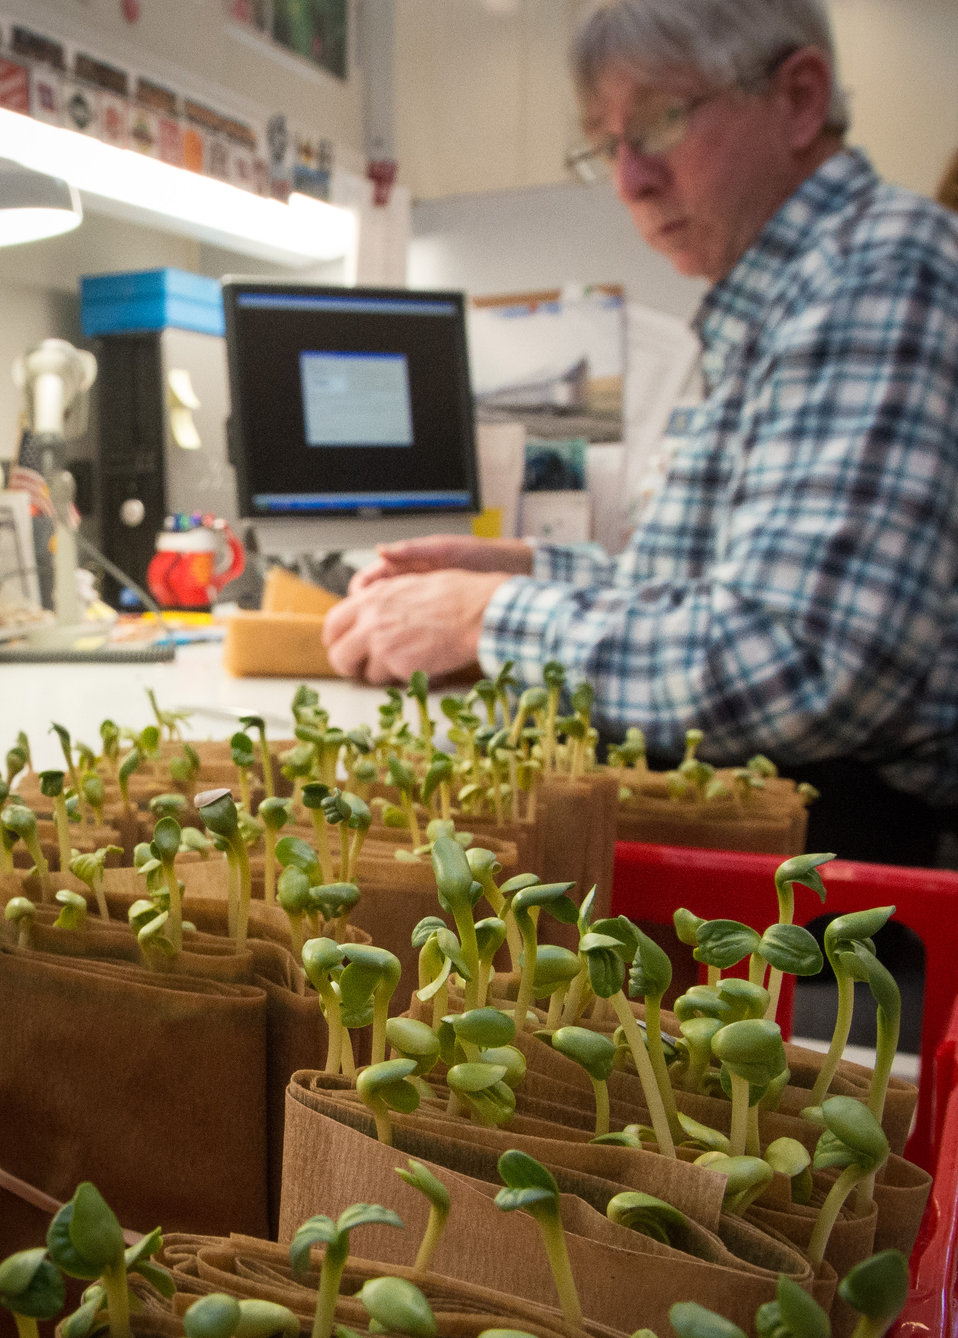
U.S. Department of Agriculture (USDA), Agriculture Research Service (ARS), National Center for Genetic Resources Preservation (NCGRP), Plant and Animal Genetic Resources Preservation Research Unit Biological Science Lab Technician (Plants) Dennis W Moss performs a safflower seed quality evaluation, while in the germination bay of the NCGRP, in Ft. Collins, CO, on Wednesday, Nov. 6, 2013.